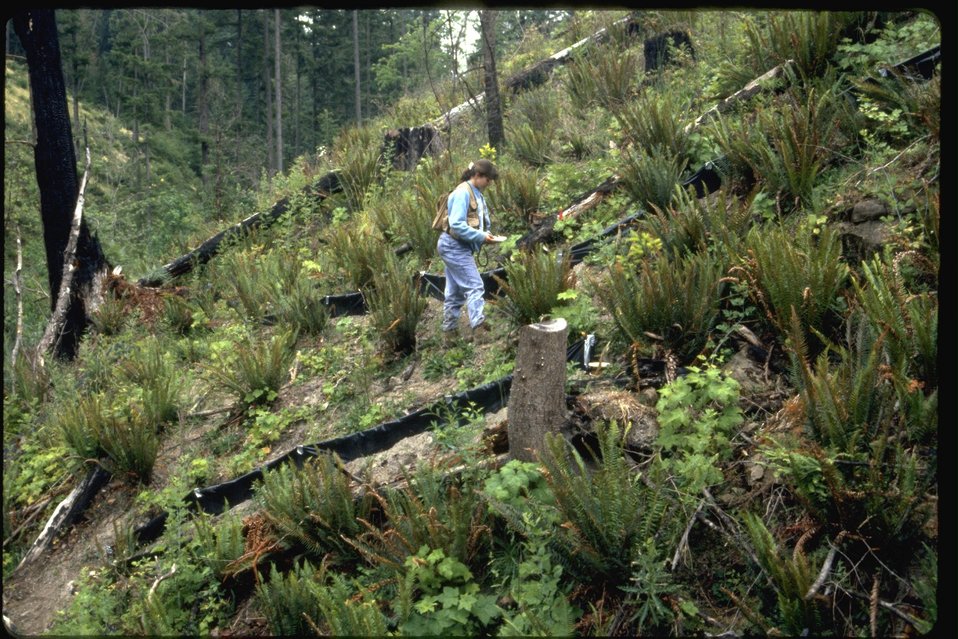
Wendy checking traps of amphibian study in clearcut.